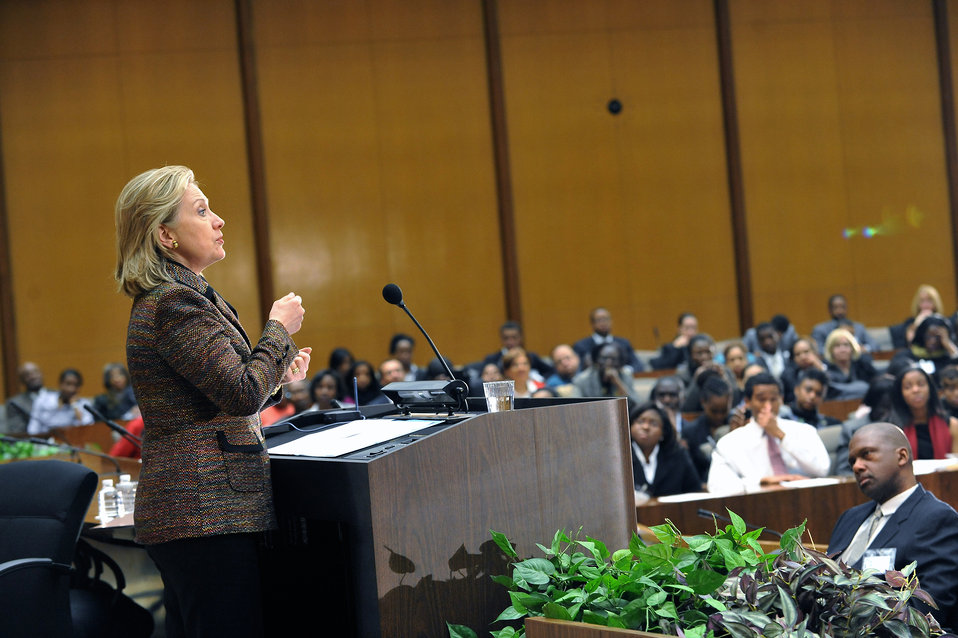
Secretary Clinton Delivers Remarks at Foreign Policy Briefing

U.S. Secretary of State Hillary Rodham Clinton delivers remarks at a U.S. Foreign Policy Briefing for students from Historically Black Colleges and Universities in the Loy Henderson Auditorium at the U.S. Department of State in Washington, D.C., on February 23, 2011.